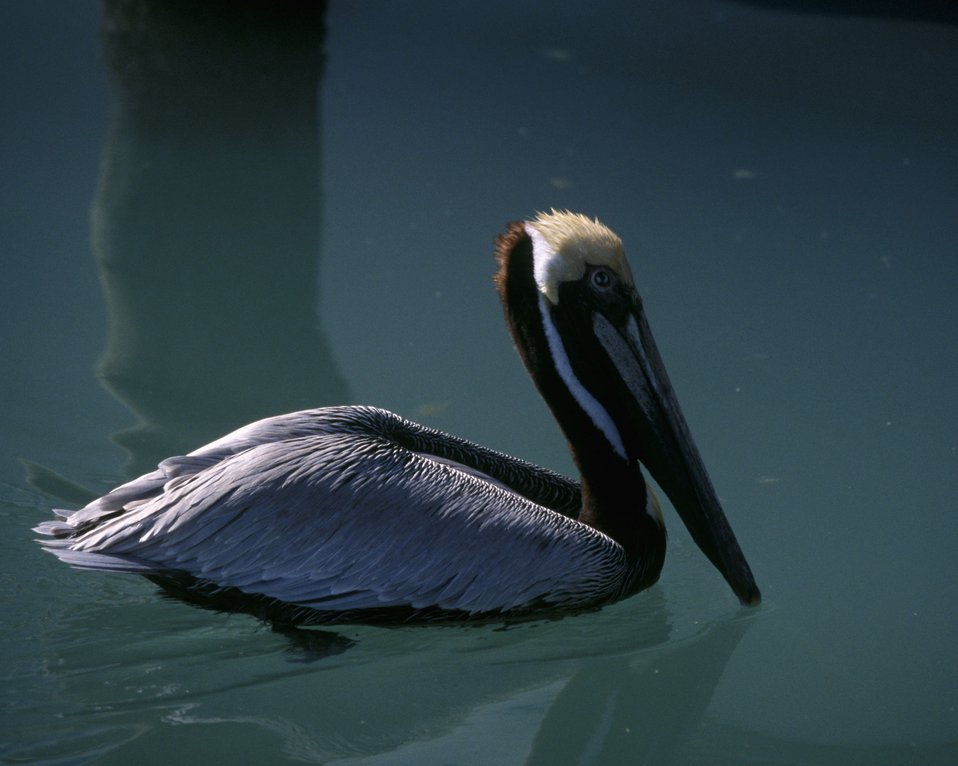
Brown Pelican floats on the water.